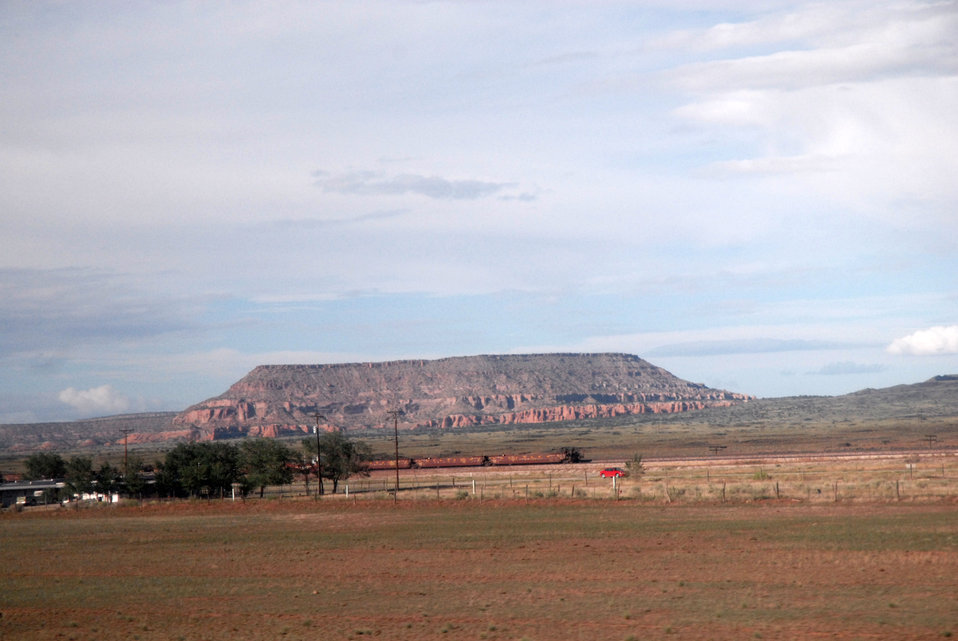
Impressive red rock formations were visible while traveling along interstate US 40 in New Mexico on September 9, 2008.